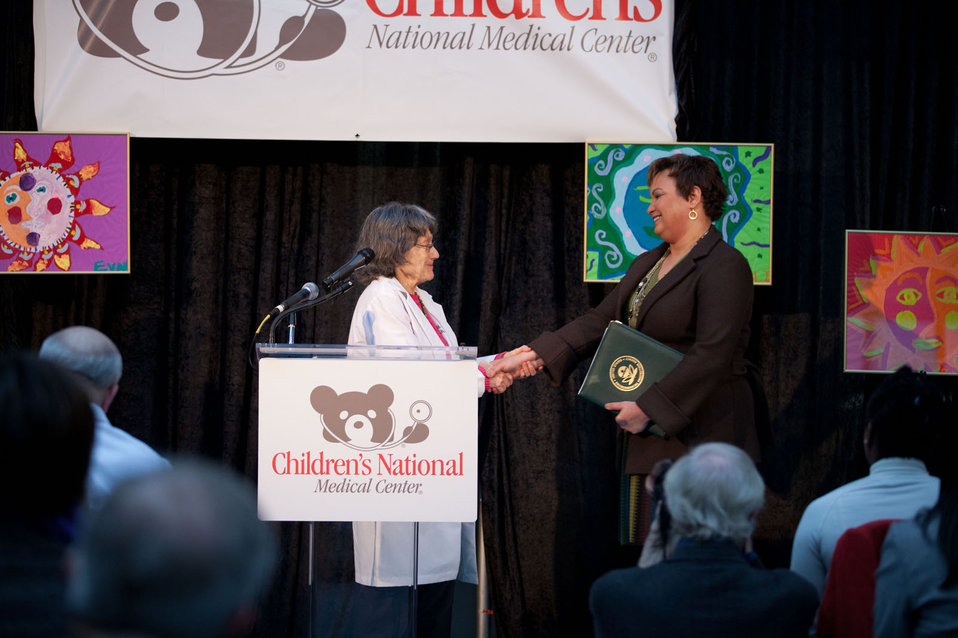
December 12, 2011 Mercury and Air Toxics Announcement at the Children's National Medical Center in Washington, D.C.

Dr. Muriel Wolf, Children's Health Centers, Attending in Pediatrics and Cardiology gives remarks and thanks Administrator Lisa P. Jackson for her work in protecting human health.

These new standards to reduce mercury and toxics emissions for cleaner air are anticipated to prevent 11,000 premature deaths and 4,700 heart attacks a year.